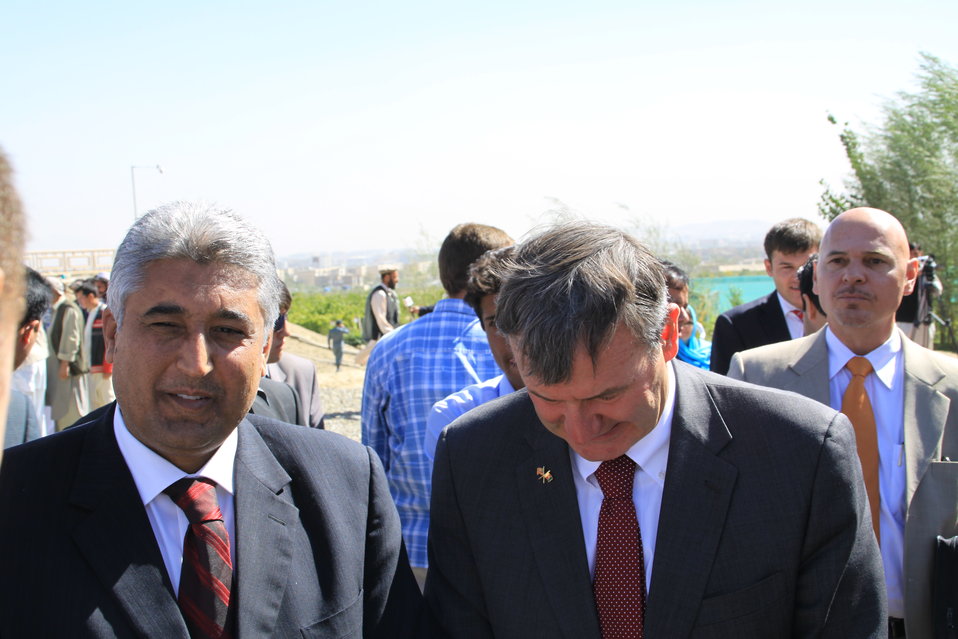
AVIPA Plus Wheat Seed Distribution 101005

US Ambassador Karl Eikenberry and USAID Acting Mission Director Kevin Brownawell joined the Minister of Agriculture, Irrigation and Livestock, H.E. Minister Mohammed Rahimi in signing a Memorandum of Understanding and distributing vouchers to area farmers for wheat and fertilizer.

US Ambassador Karl Eikenberry and USAID Acting Mission Director Kevin Brownawell joined the Minister of Agriculture, Irrigation and Livestock, H.E. Minister Mohammed Rahimi in signing a Memorandum of Understanding and distributing vouchers to area farmers for wheat and fertilizer.

US Ambassador Karl Eikenberry and USAID Acting Mission Director Kevin Brownawell joined the Minister of Agriculture, Irrigation and Livestock, H.E. Minister Mohammed Rahimi in signing a Memorandum of Understanding and distributing vouchers to area farmers for wheat and fertilizer.